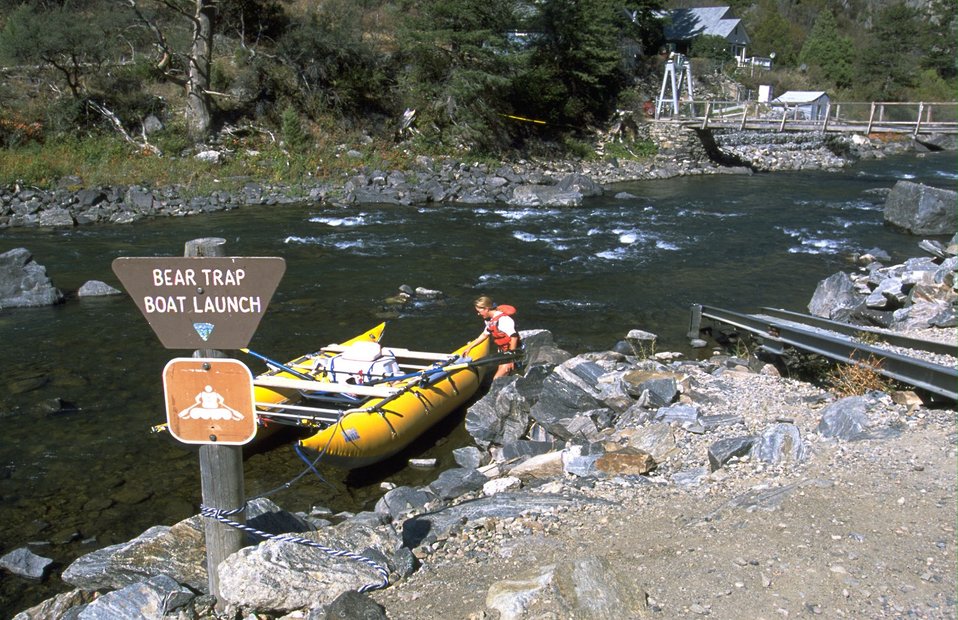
Launching a Cataraft on the Madison River